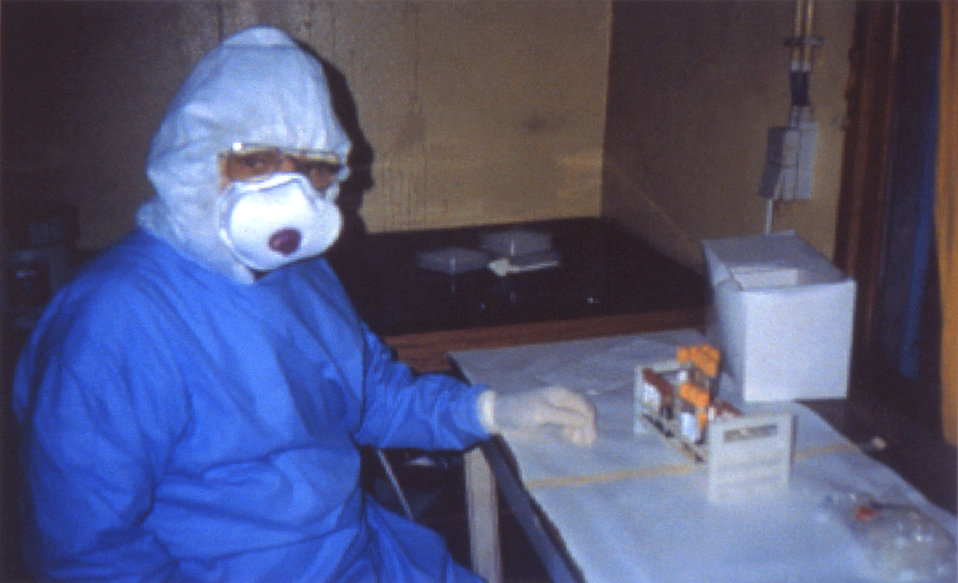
This image depicts an epidemiologist participating in a Nipah virus investigation wearing the personal protective equipment (PPE) required while doing field work involving pathogens that are highly-infectious, and which produce a very high mortality rate.